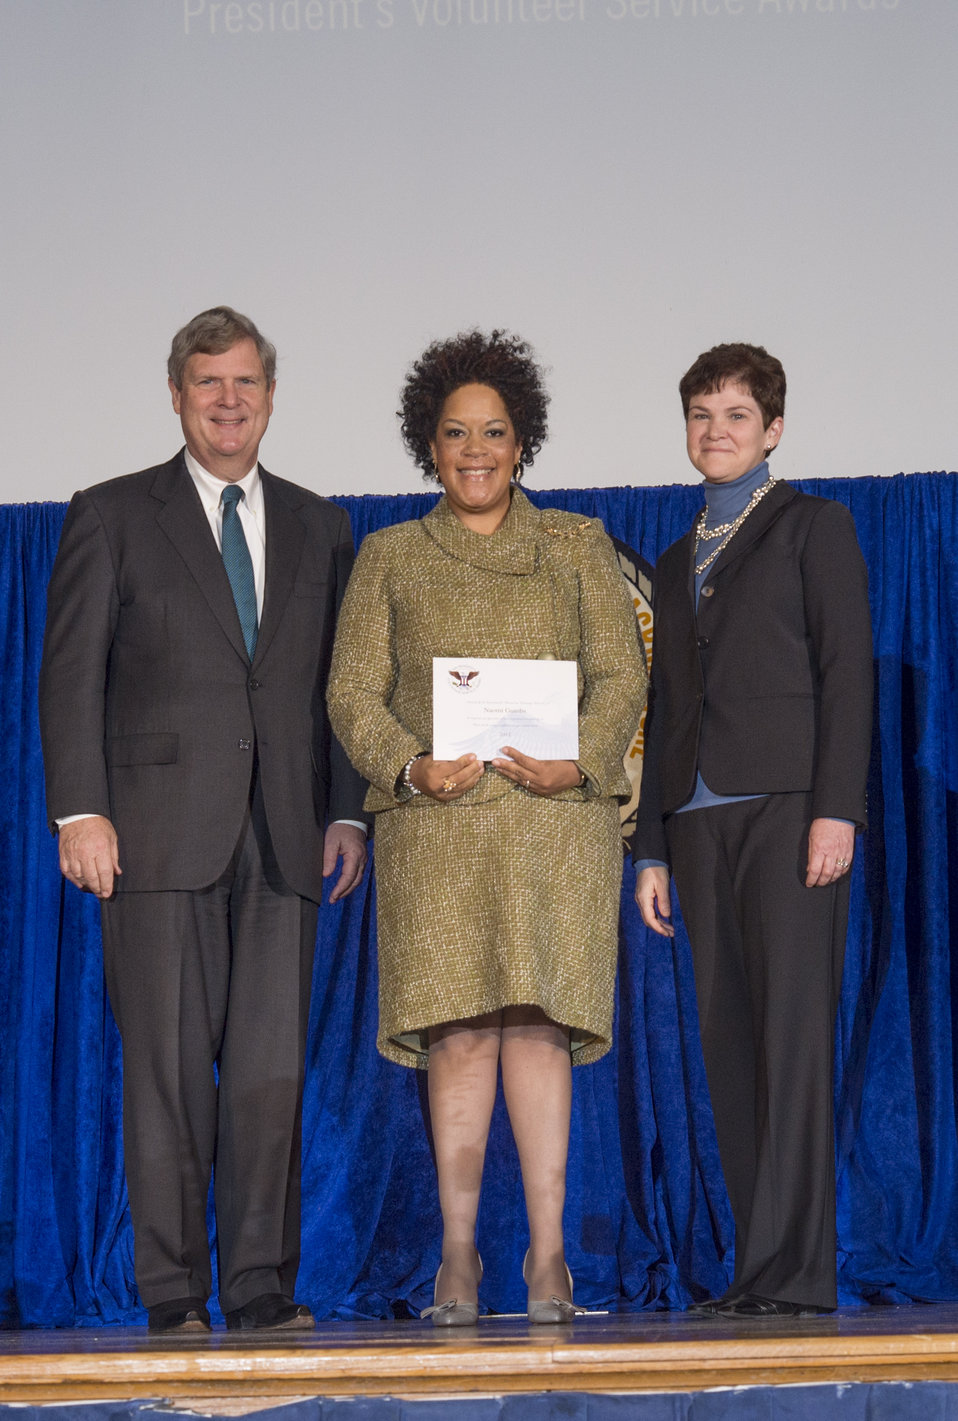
Agriculture Secretary Tom Vilsack and Agriculture Deputy Secretary Krysta Harden present the President’s Bronze Volunteer Service Award to Naomi Gumbs at the 2013 Secretary's Honor Awards in the Jefferson Auditorium at the U.S. Department of Agriculture (USDA) in Washington, D.C. on Wednesday, Dec. 11, 2013. The President’s Bronze Volunteer Service Award is given to an employee that has served a minimum of 100 hours and a maximum of 249 hours of service.